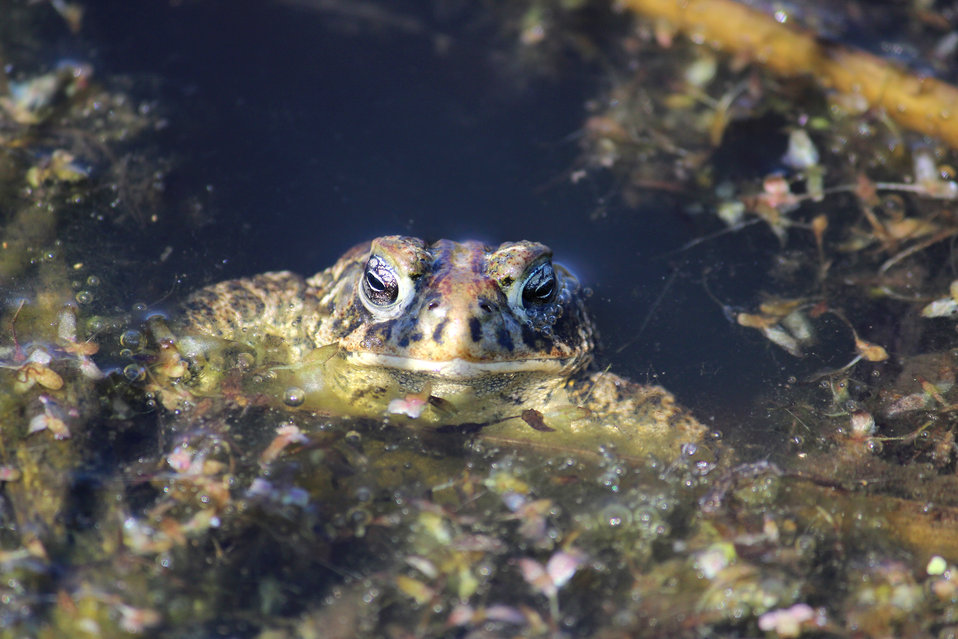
It's a Toad!

But what species of toad--I'm not sure. Found in LaMoure County, ND--it is probably an American, Canadian, or Great Plains Toad.